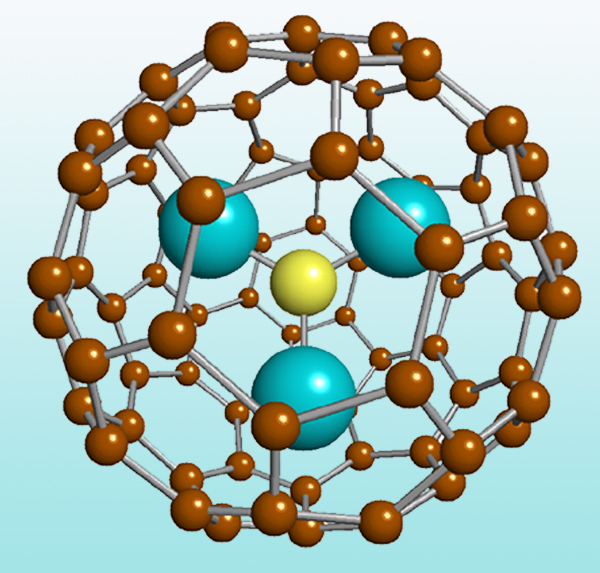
Trimetasphere molecule

Computer model of a LUNA Innovations Trimetasphere molecule.

Credit: Graphic courtesy LUNA Innovations